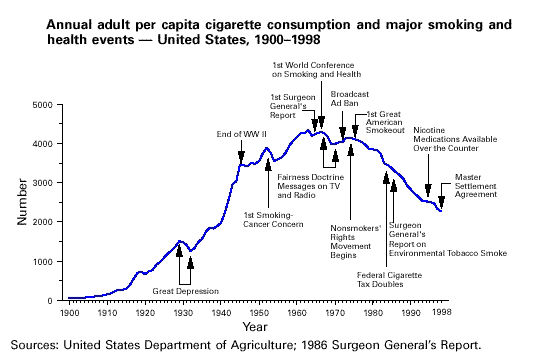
Line graph showing annual adult per capita cigarette consumption and major smoking and health events.